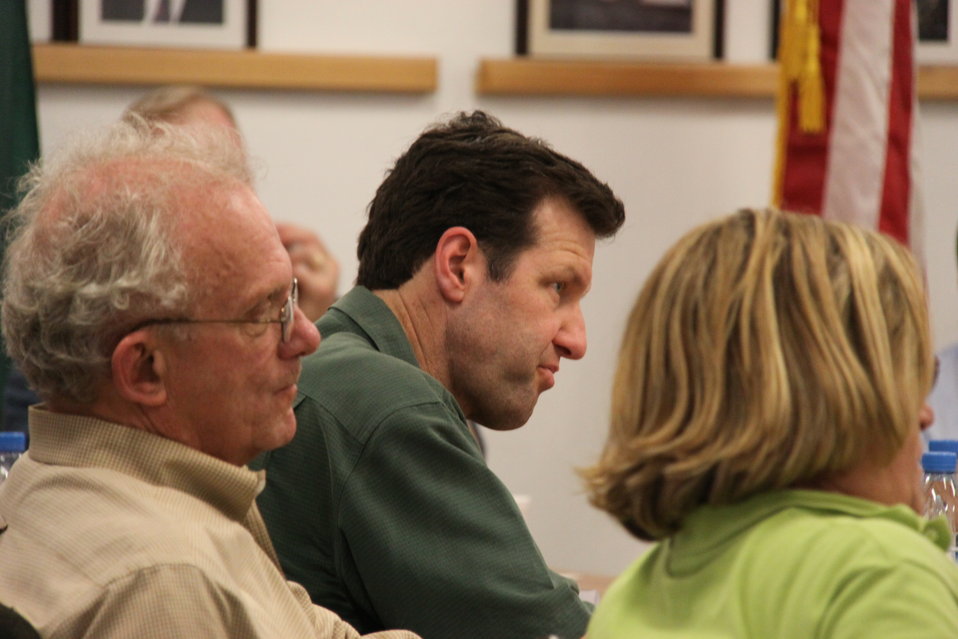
Meeting with Local Leaders in Kandahar